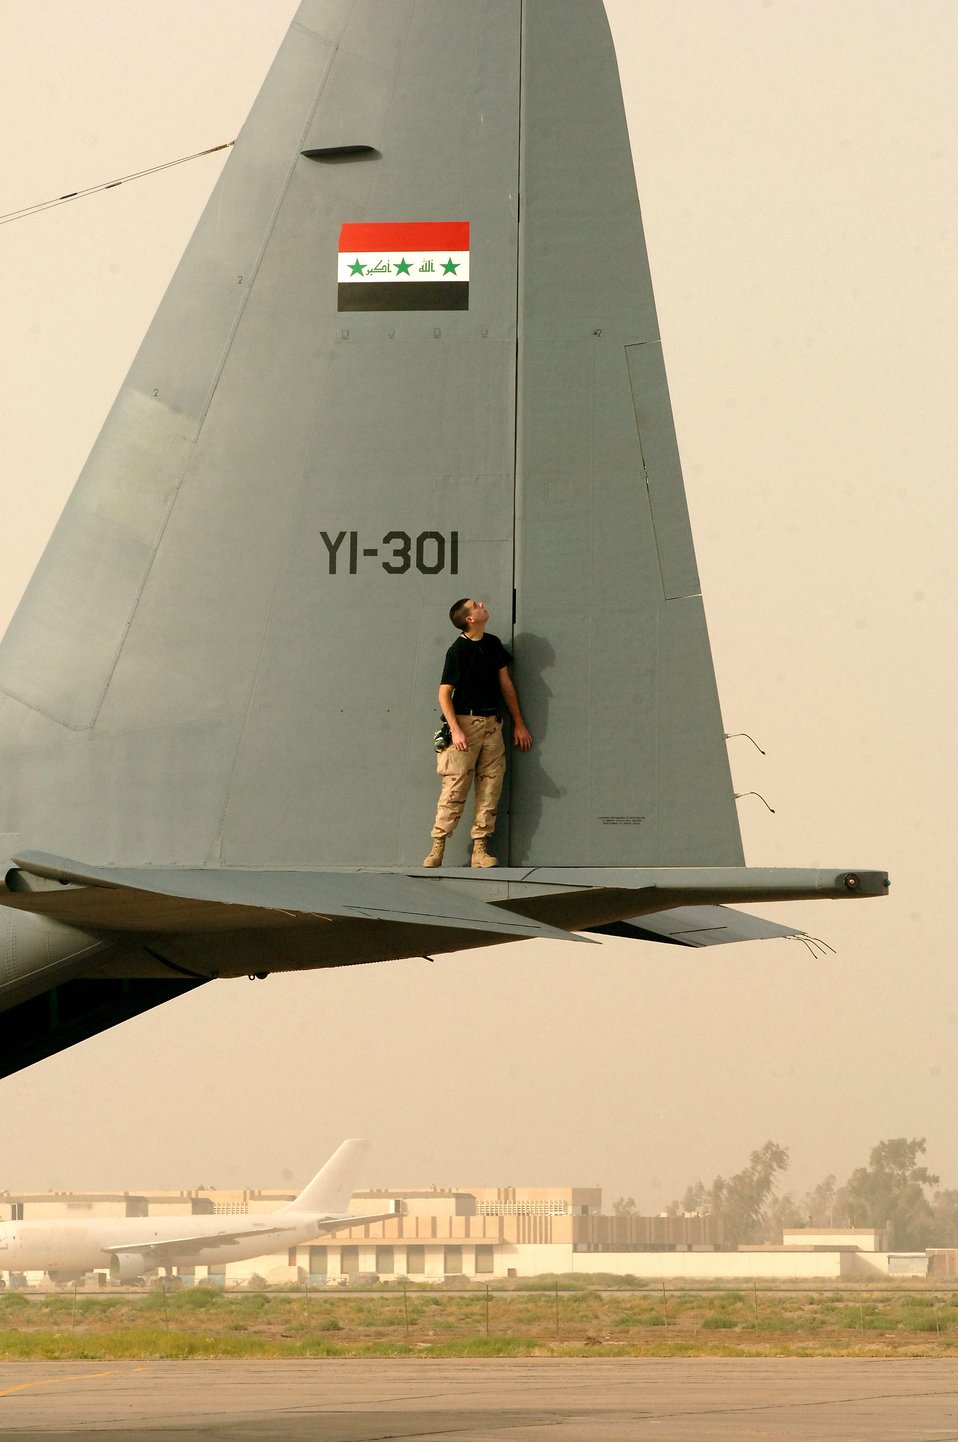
Post-flight check

Senior Airman Jeff McCain performs a post-flight check on an Iraqi C-130 at New Al Muthana Air Base, Iraq, on July 11. Airman McCain is a member of the Coalition Air Force Transition Team working with Iraqis to rebuild their air force. He is deployed from Little Rock Air Force Base, Ark. New Al Muthana AB is located next to Sather Air Base at the Baghdad International Airport. The Iraqi Ministry of Defense formally stood up the new air base and its C-130 unit, the 23rd Squadron, in a ceremony March 7.